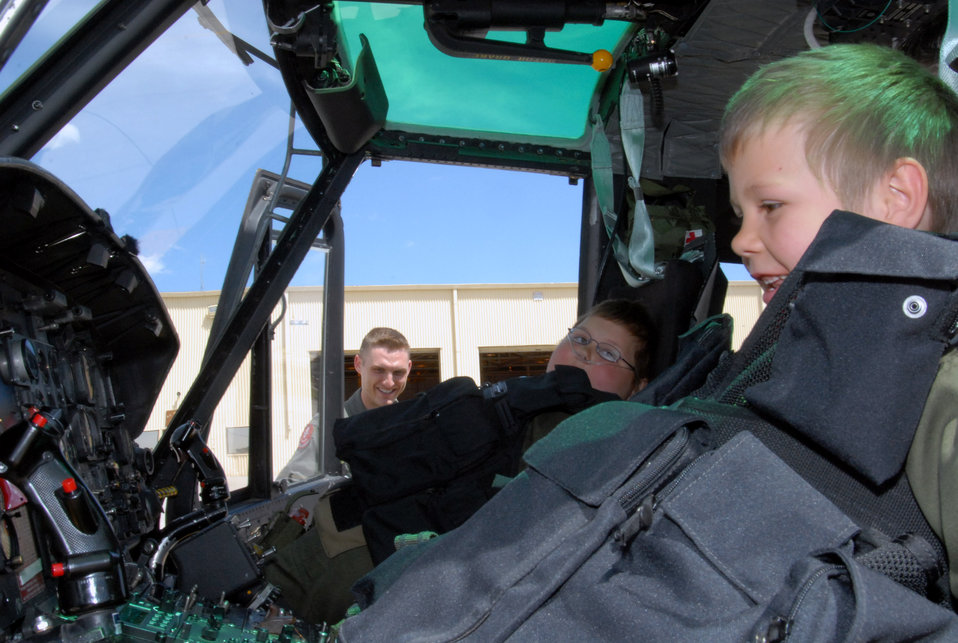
Child becomes first missileer for a day at F.E. Warren

Avery Ruskey-Moffett and Ariana Ruskey-Moffett check out a UH-1N Iroquois helicopter from the 37th Helicopter Squadron June 11 at F.E. Warren Air Force Base, Wyo. The children and their parents also saw a military working dog demonstration, ate at the Chadwell Dining Facility, and toured the missile maintenance training facility. Ariana, a cancer survivor, participated in the base's first Missileer for a Day Program that allows special children to live the life of a missileer for a day.